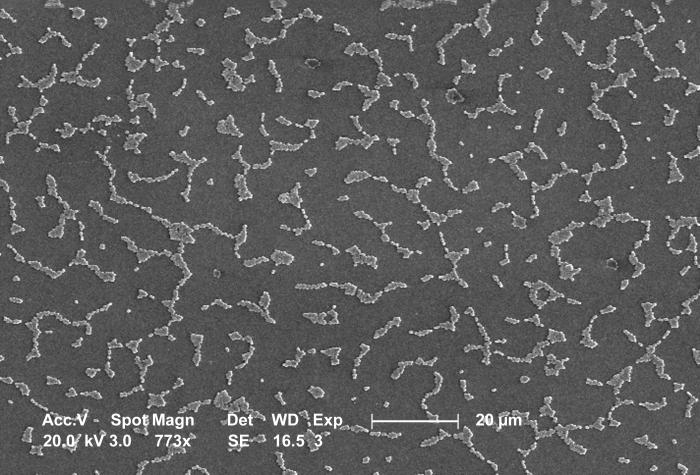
This SEM depicts a number of clusters of aerobic Gram-negative, non-motile Acinetobacter baumannii bacteria as seen under a low magnification of 773x.